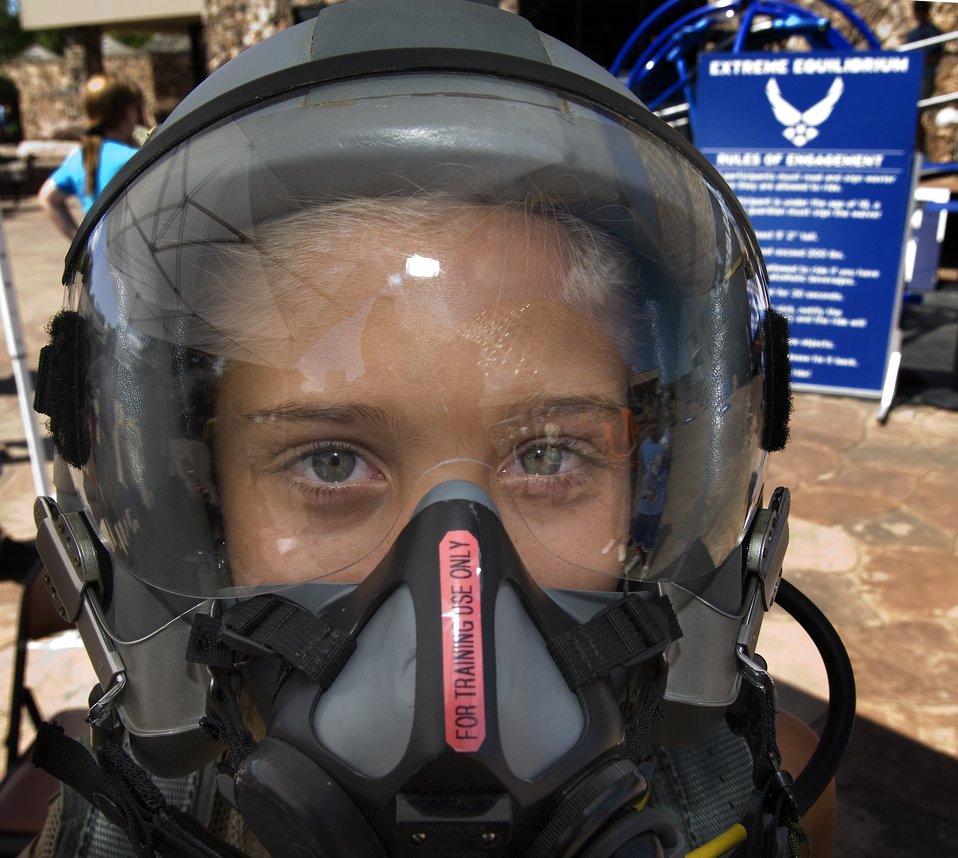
Air Force Week in the Heartland reaches out to Omaha zoo

Kathryn Jacobs tries on fighter pilot gear during Air Force Week in the Heartland Aug. 12 at the Henry Doorly Zoo in Omaha, Neb. Zoo visitors also had the chance to see the Do Something Amazing display, a motion simulator and video simulators during Air Force Week in the Heartland.